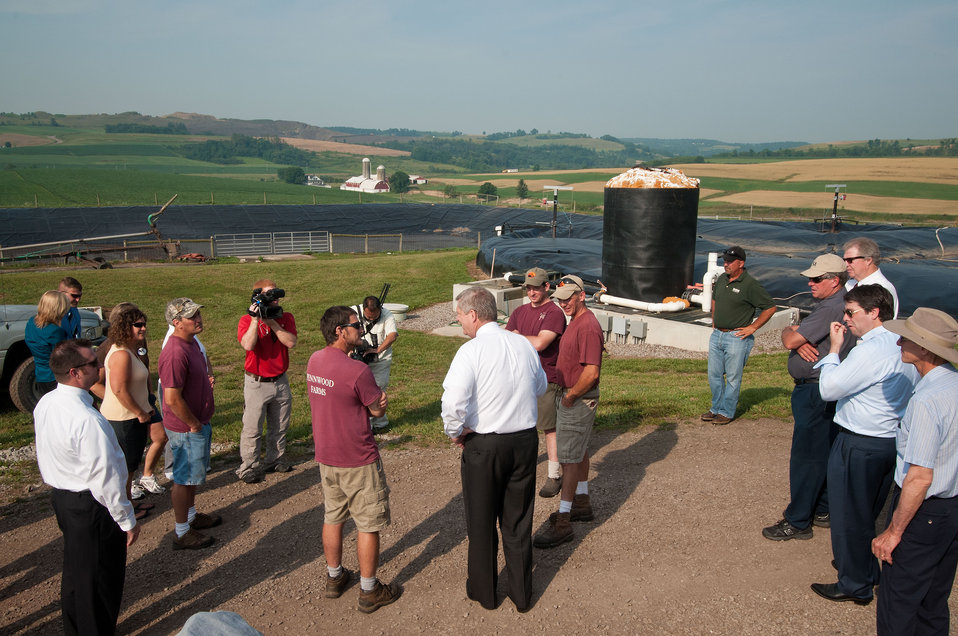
From left: Don Stoltzfus, Glenn Stoltzfus, Agriculture Secretary Tom Vilsack, Duane Stoltzfus and Dwight Stoltzfus Pennwood Dairy Farms. Secretary Vilsack visited the Stoltzfus’ dairy in Berlin, PA on Tuesday, July 17, 2012. During his visit he highlighted the U.S. Department of Agriculture’s (USDA) energy efficiency programs and announced a new effort to help rural consumers make affordable, energy-efficient improvements to their homes and businesses. The Pennwood Dairy Farms uses anaerobic digester to produce energy to operate the farm. An anaerobic digester is a component of a waste management system that captures biogas for energy production, manages odors, reduces the net effect of greenhouse gas emissions, and reduces pathogens. The anaerobic digester practice is part of a planned conservation management system that manages manure and/or comprehensive nutrient management system.